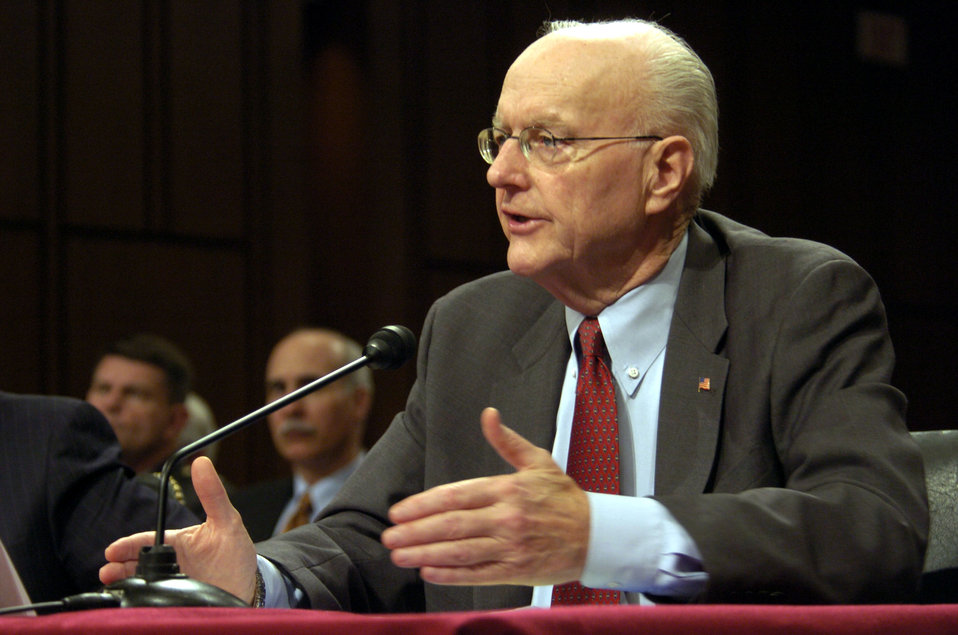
Teets discusses recapitalization, death benefit, core values

WASHINGTON -- Peter B. Teets, acting secretary of the Air Force, testifies before the Senate Armed Services Committee here March 3.